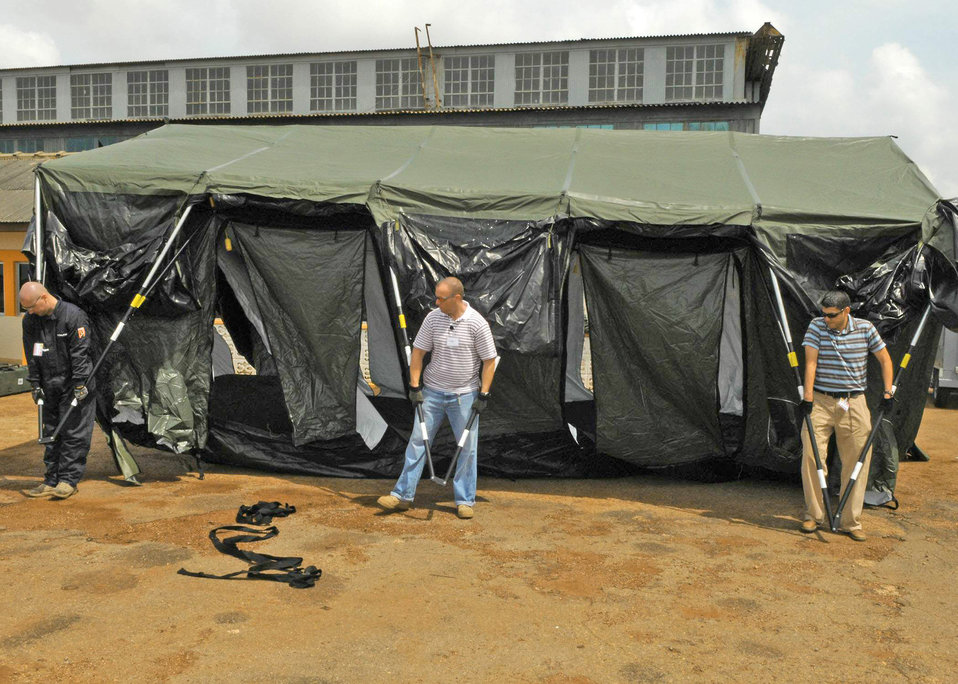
17th Air Force members support presidential visit to Ghana

Staff James Townes, Tech. Sgt. Tracy Curtis and Capt. Daniel Hervas set up a tent at Kotoka International Airport July 1 at Accra, Ghana. The Airmen are among more than 150 Airmen, Sailors and Marines in Ghana and Sailors aboard the USS Iwo Jima who form a task force supporting President Barack Obama's visit July 10 and 11. Sergeant Townes is assigned to the 1st Combat Communications Squadron from Ramstein Air Base, Germany. Sergeant Curtis is assigned to the 621st Contingency Response Wing from McGuire Air Force Base, N.J. Captain Hervas is assigned to the 39th Logistics Readiness Squadron at Incirlik Air Base, Turkey/